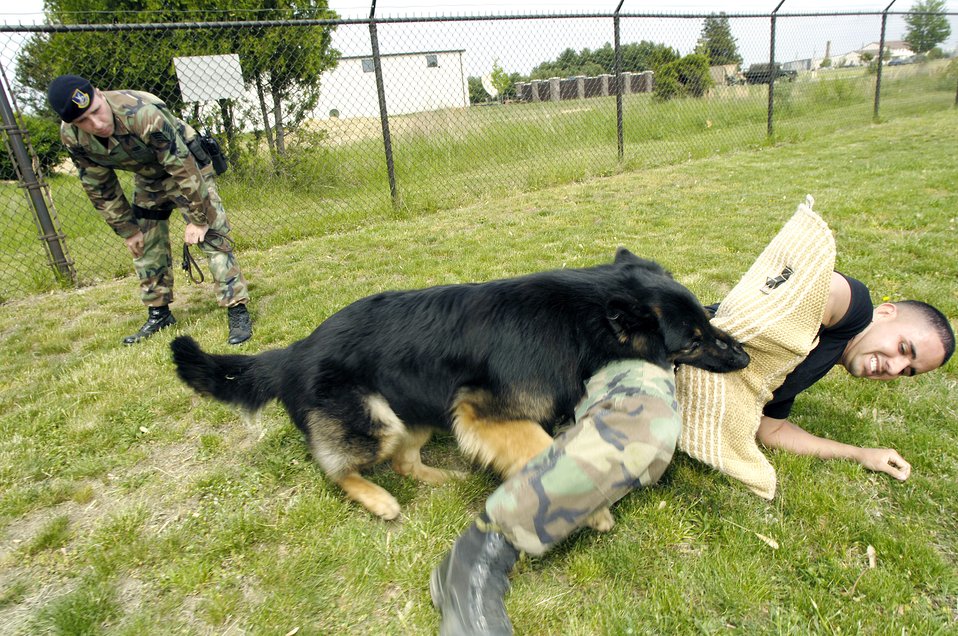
Military working dog trains hard

Staff Sgt. Stephen Upton (rear) observes as Cezar